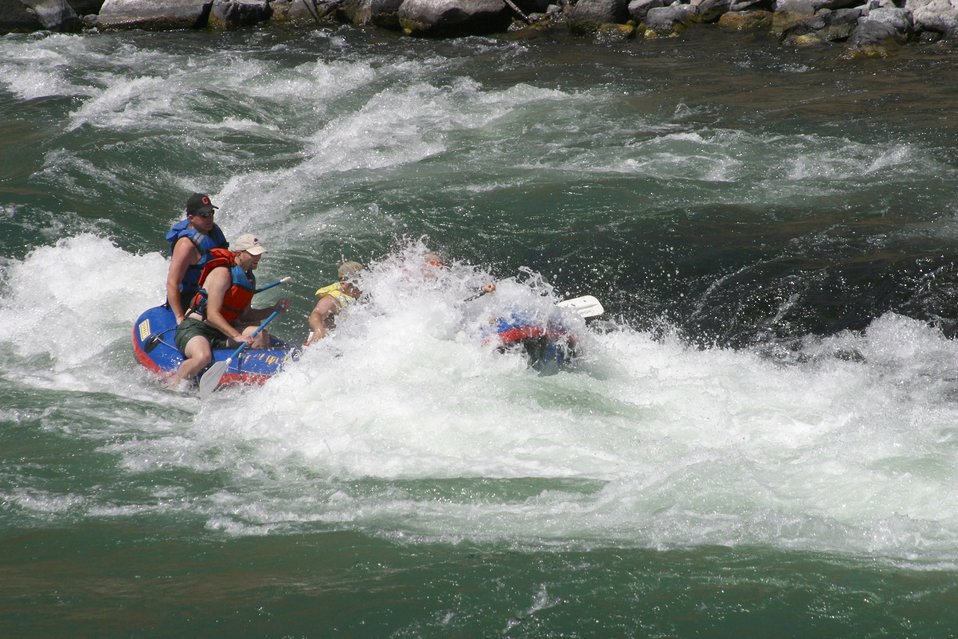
Boxcar Rapids class III, has large waves with a small drop that form turbulent currents. 7/26/03 Pelton Dam 3600 cfs: Moody Rapids 4300 cfs.